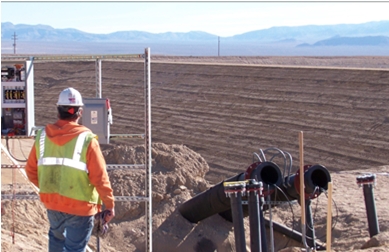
SRS Leachate Collection System test

Workers test a leachate collection system at the Savannah River Site.